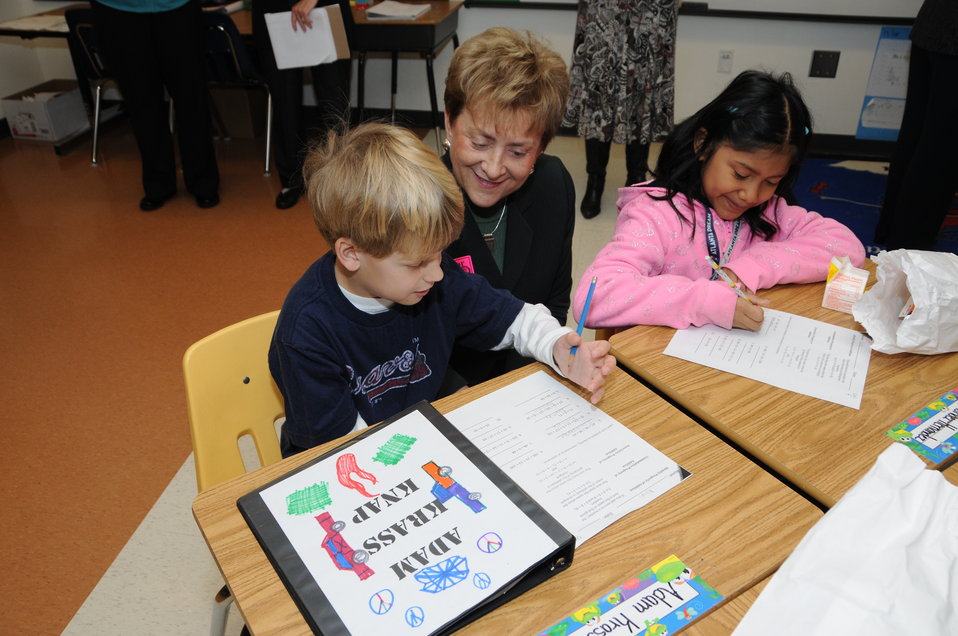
Thornton - Lake Forest Elementary School - Dec 5, 2011 074

USDA Deputy Under Secretary FNCS, Dr. Janey Thornton talks to students about their assignments in Mikelle Caine’s second grade advance class at Lake Forest Elementary School, Sandy Springs, Ga., during breakfast in the classroom